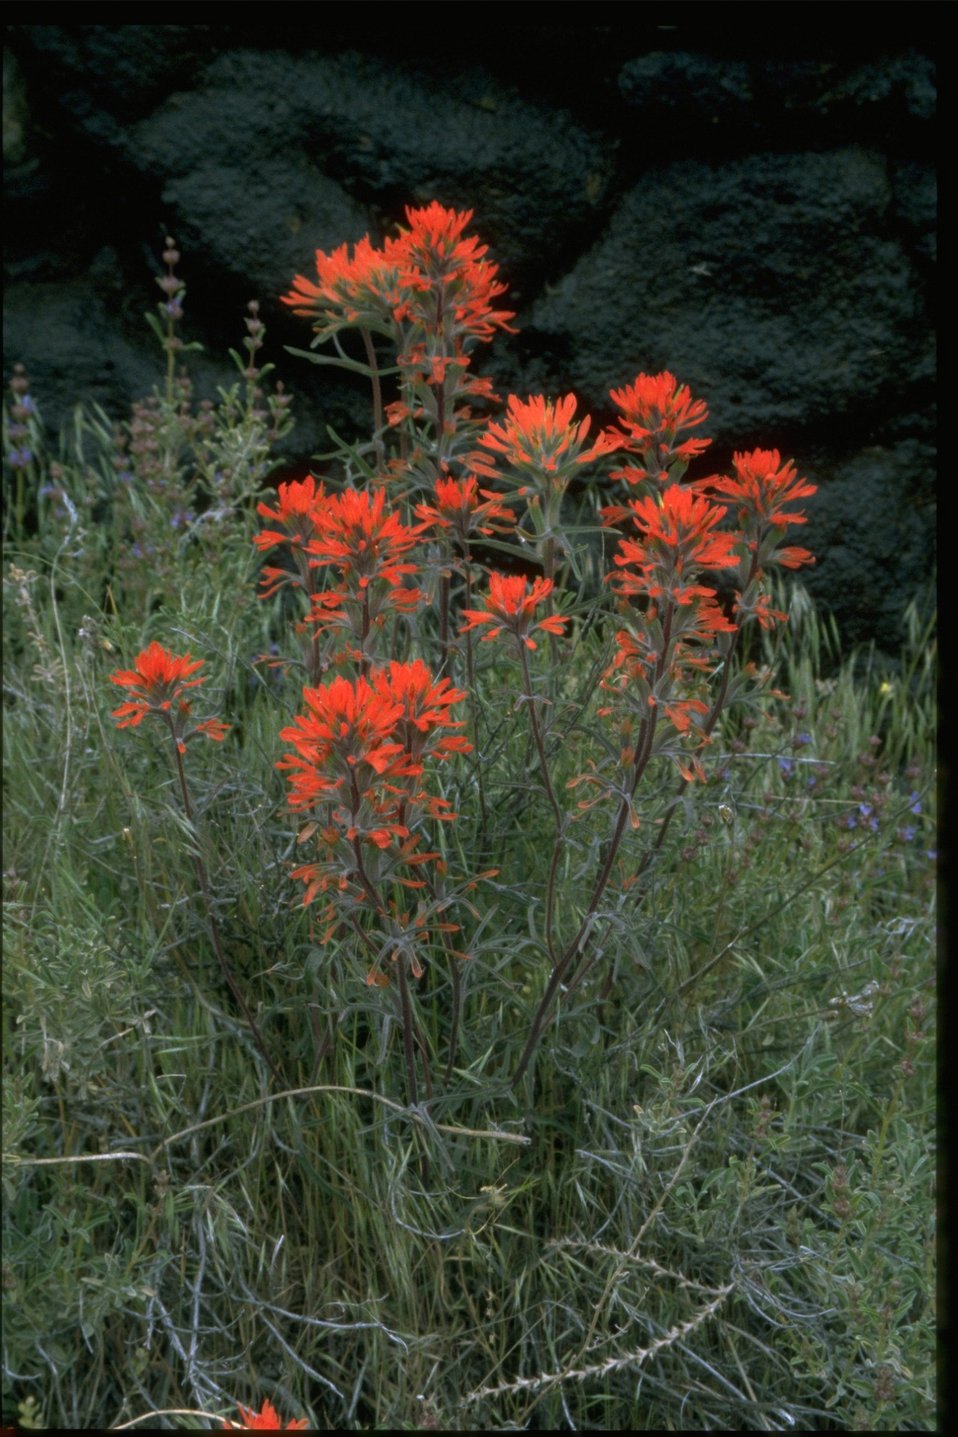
Medium shot of Indian Paintbrush (Castilleja linariaefolia).